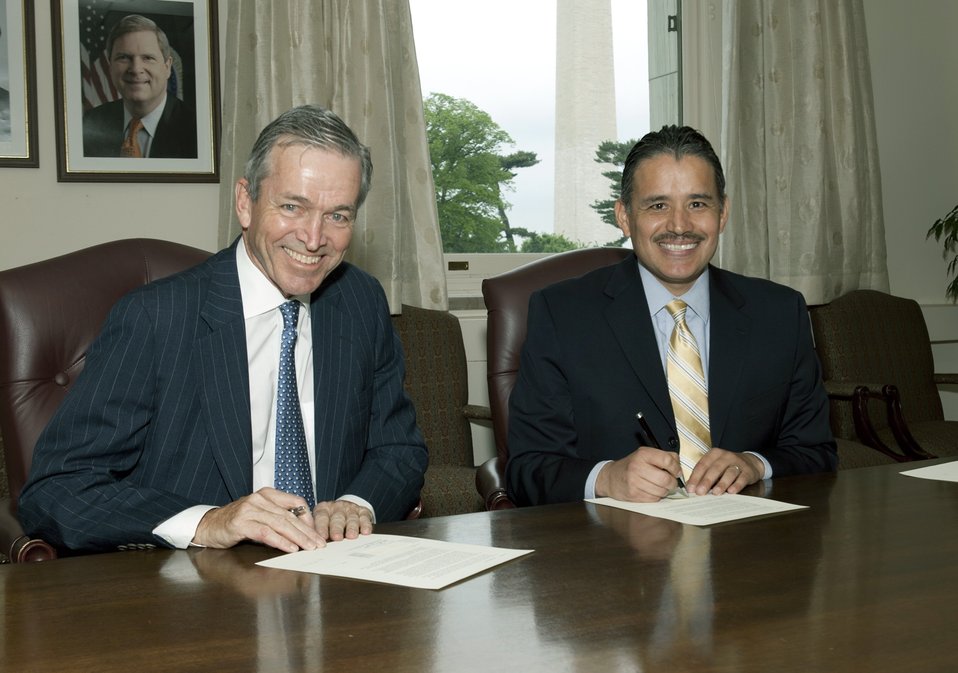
Agriculture Deputy Assistant Secretary for Administration Oscar Gonzales Jr. (right) and f Keep America Beautiful (KAB) President Matthew McKenna sign a Memorandum of Understanding at the U.S. Department of Agriculture in Washington, D.C., on Thursday, April 25, 2012. This memorandum establishes a framework whereby the U.S. Department of Agriculture can partner with KAB to promote the creation of community produce gardens across America. The memorandum focuses on establishing gardens in communities where a lack of access to fresh and healthy foods creates increased risks of food insecurity and obesity risks.